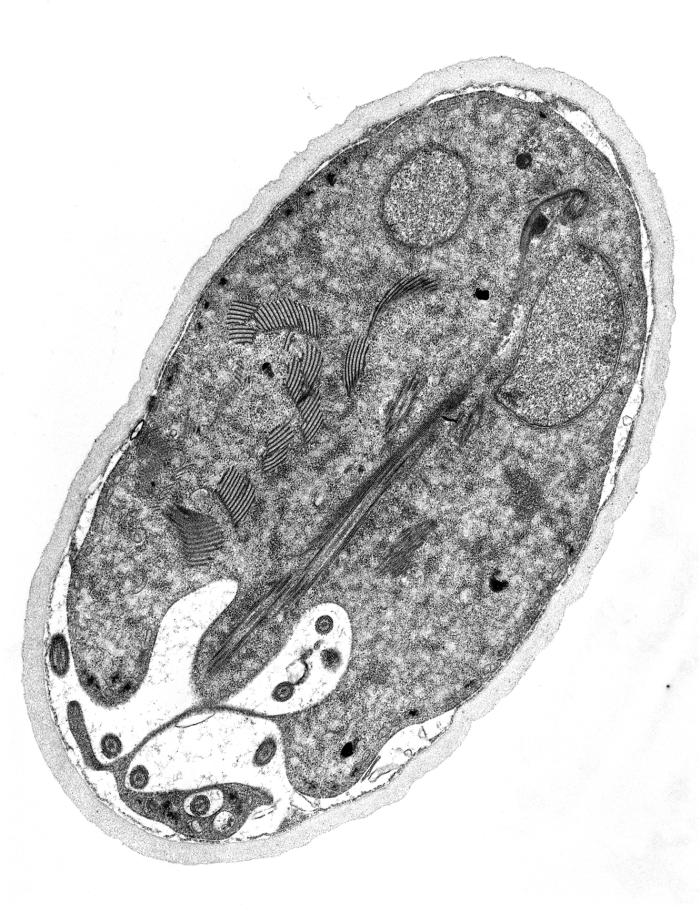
This thin-section transmission electron micrograph (TEM) revealed some of the ultrastructural morphology found within the cyst-stage of a Giardia sp. protozoan. The outer cyst wall is composed of filamentous and membranous portions, and is separated from the cytoplasm of the trophozoites contained within by the peritrophic space. This cyst wall is approximately 0.25 microns thick.